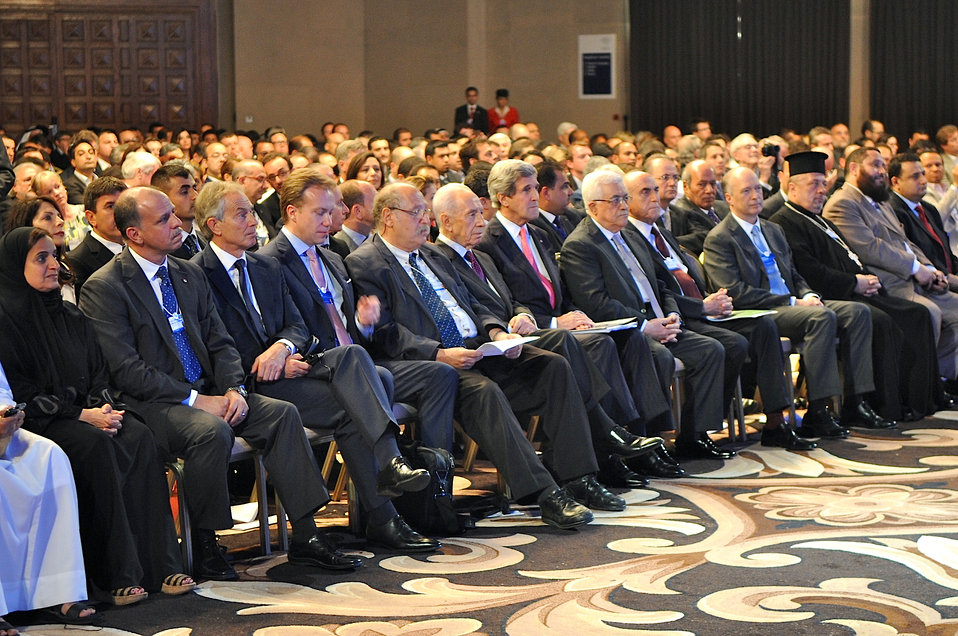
Secretary Kerry Attends the World Economic Forum

U.S. Secretary of State John Kerry, Israeli President Shimon Peres, and Palestinian Authority President Mahmoud Abbas join former British Prime Minister Tony Blair and other government and business leaders at the World Economic Forum in Dead Sea, Jordan, on May 26, 2013.